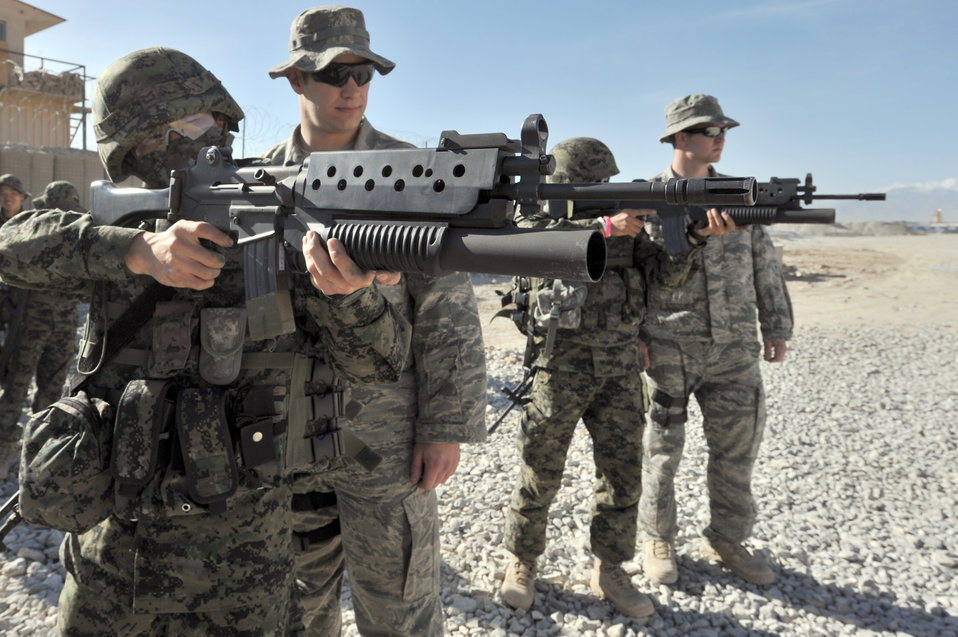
Korean soldiers integrate into Bagram's base defense

Senior Airman Gary Farmer (second from left) and Staff Sgt. Mason Flores, both from the 455th Expeditionary Security Forces Squadron, watch Staff Sgt. Jon Myung Jae (left) and Staff Sgt. Kim Tae Young, both South Korea security force soldiers, fire non-lethal 40 mm sponge rounds during M203 grenade launcher training at Bagram Airfield, Afghanistan, April 22, 2011.